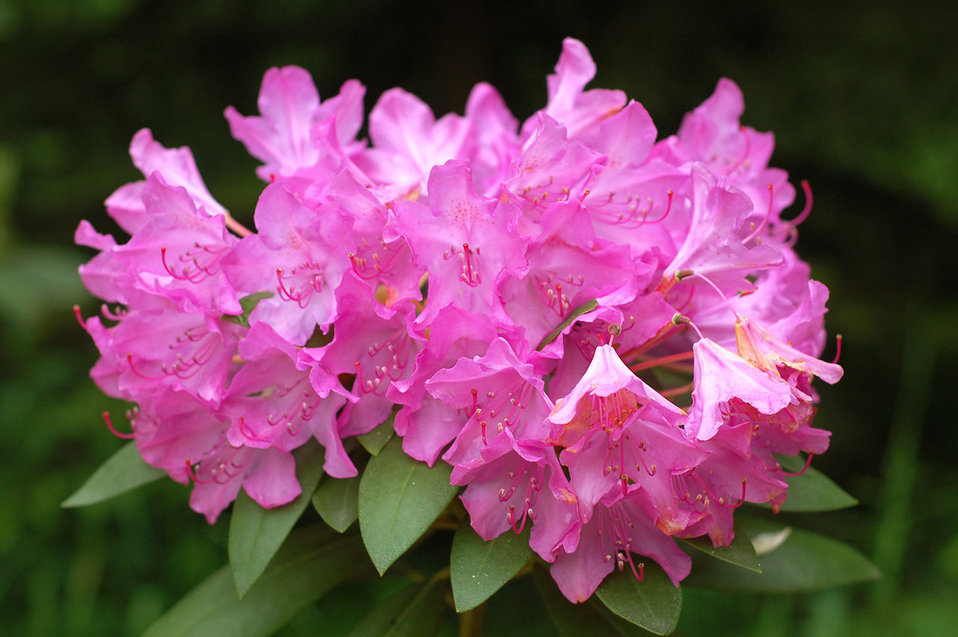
Pink rhododendron flowers.